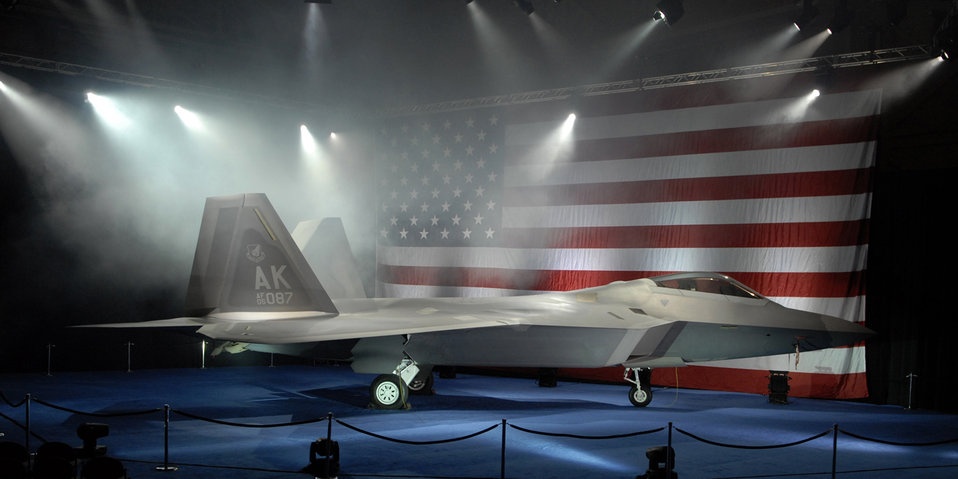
First F-22 bound for Pacific unveiled

Representatives from the Air Force and Lockheed Martin gathered to see the roll-out of Pacific Air Forces' first F-22 Raptor Feb 12 at Marietta, Ga. This F-22 is the first of several that will be assigned to PACAF at Elmendorf Air Force Base, Alaska. The F-22 aerodesign, advanced flight controls, thrust vectoring, and high thrust-to-weight ratio provide the capability to outmaneuver all current and projected aircraft.